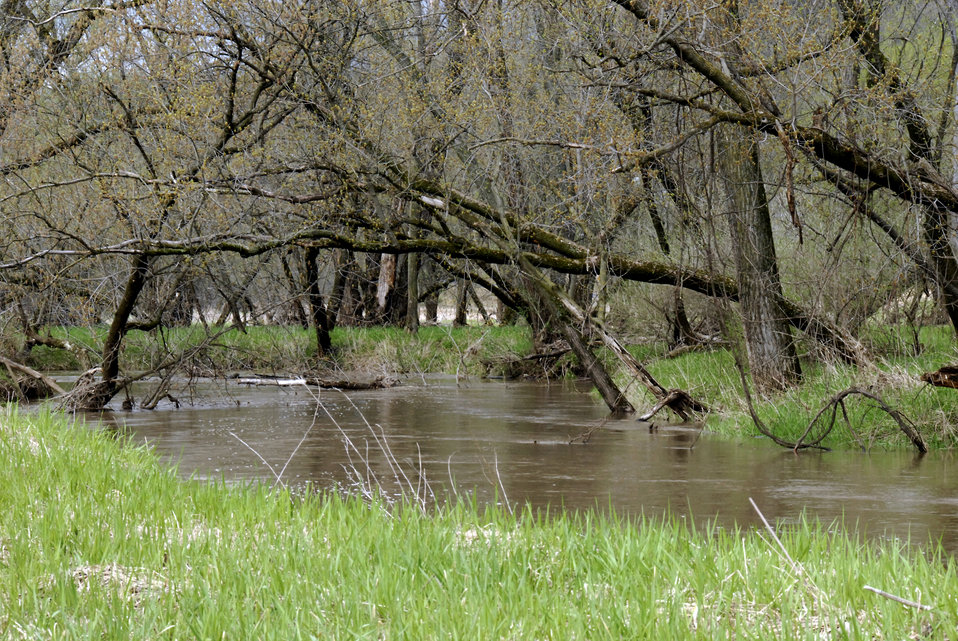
A rain-swollen stream flows through farmland in La Crosse, Wisconsin on April 25, 2008. The U.S. Department of Agriculture’s (USDA) Natural Resource Conservation Service (NRCS) has various programs to assist farmers and ranchers in implementing and maintaining conservation practices that will enable them to have more sustainable and profitable farms and ranches.